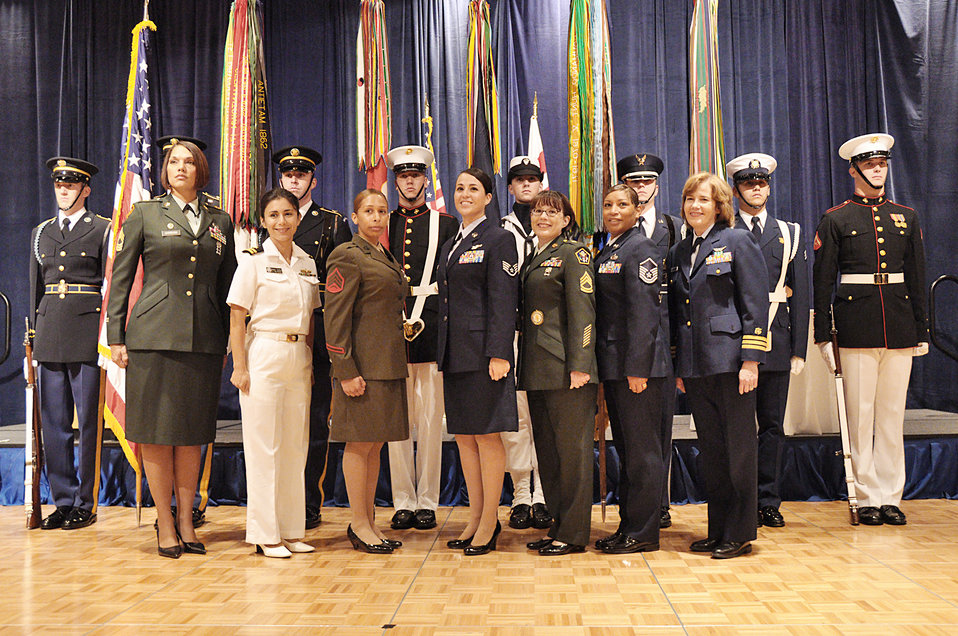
Defense Latinas praised for distinguished service

Twelve outstanding active-duty servicemembers and Department of Defense civilians were honored with the Latina Distinguished Service Award for their service to the nation by Latina Style Magazine and DOD leaders in Washington Sept. 9, 2009. Several of the awardees could not be present, because they are deployed overseas.